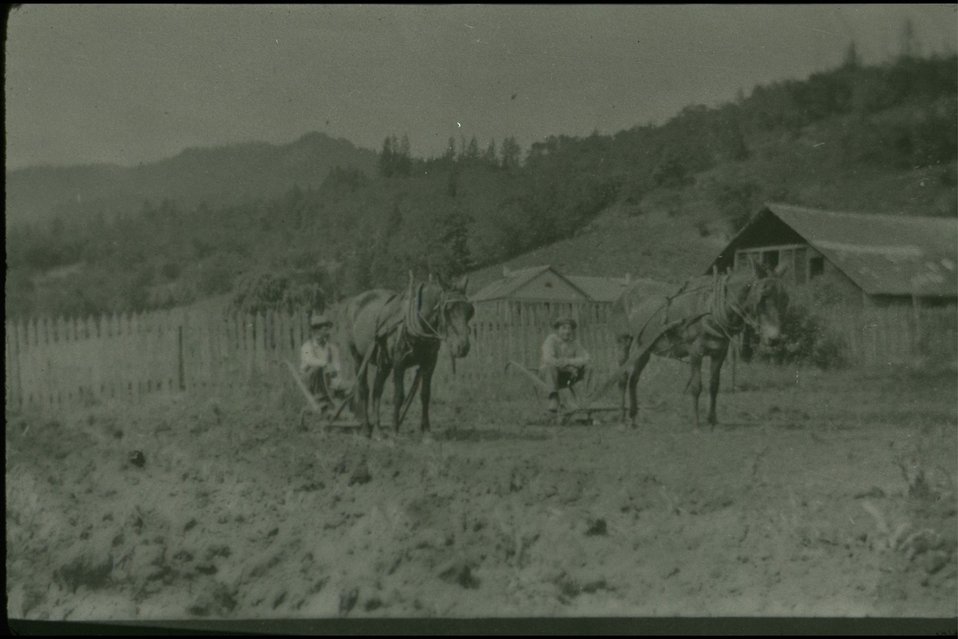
Rogue River - Farmer working field with horses.